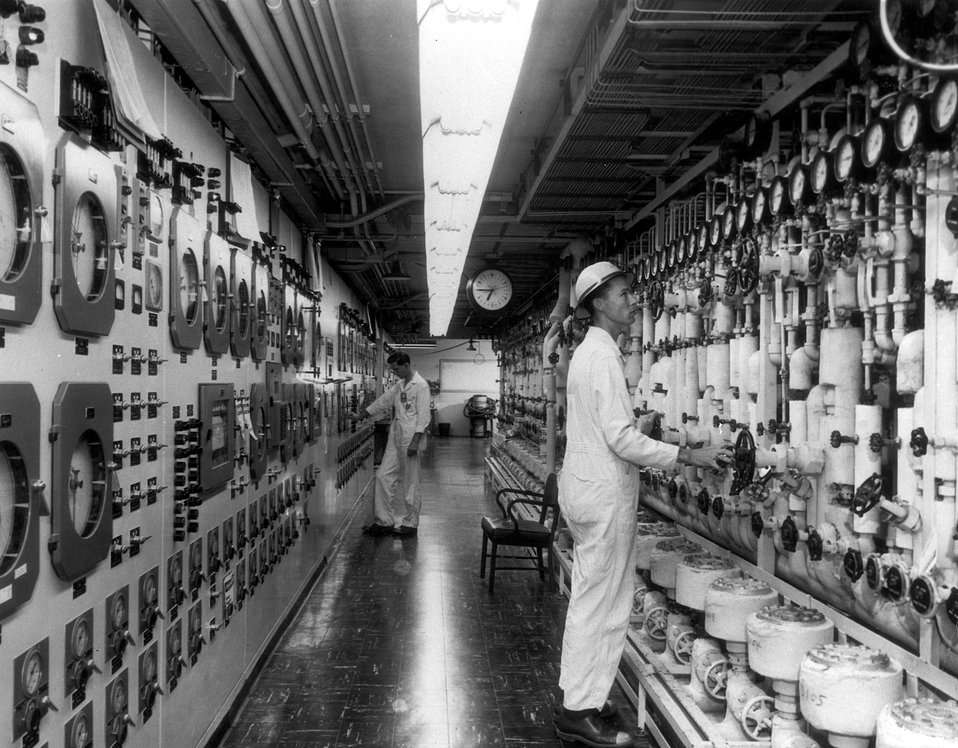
National Reactor Testing Station, Idaho...Recording instruments and controls for the batch dissolution process, in the operating corridor of the Idaho Chemical Processing Plant by Phillips Petroleum Company for the Atomic Energy Commission at the National Reactor Testing Station. Circa 1957.